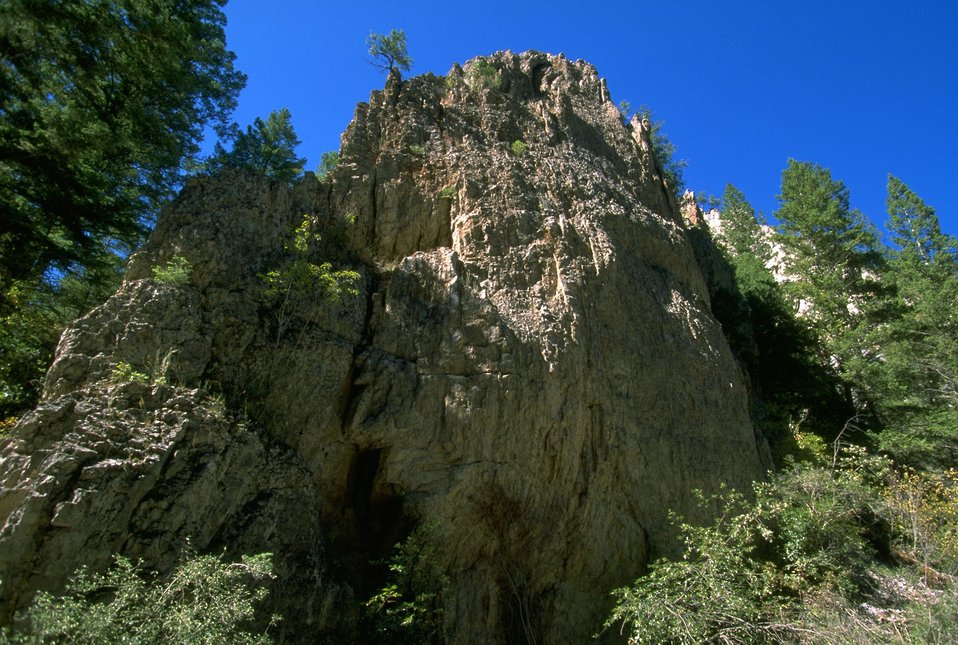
Rattler Gulch-Limestone Cliffs ACEC (area of critical environmental concern)